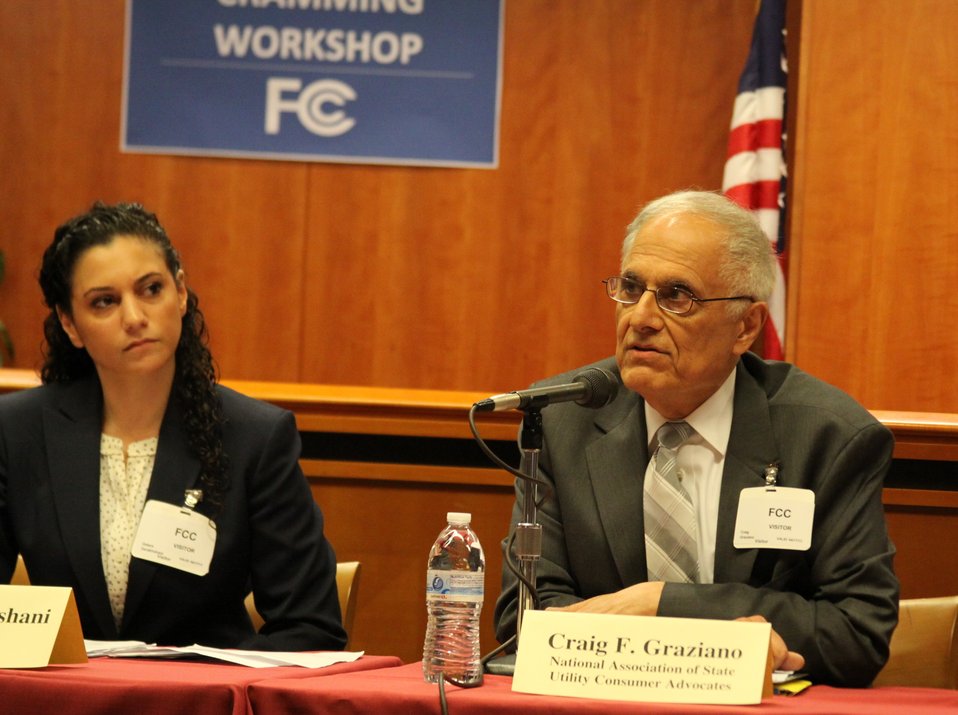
April 17, 2013 Bill Shock and Cramming Workshop